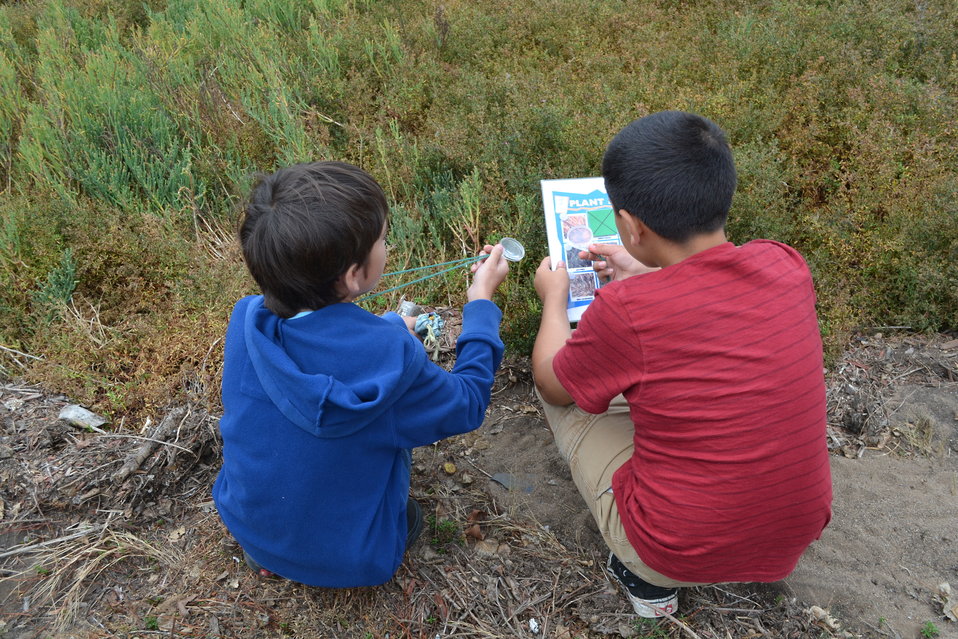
Playing salt marsh plant bingo game

A fun way to introduce children to salt marsh plants is by playing the plant bingo game